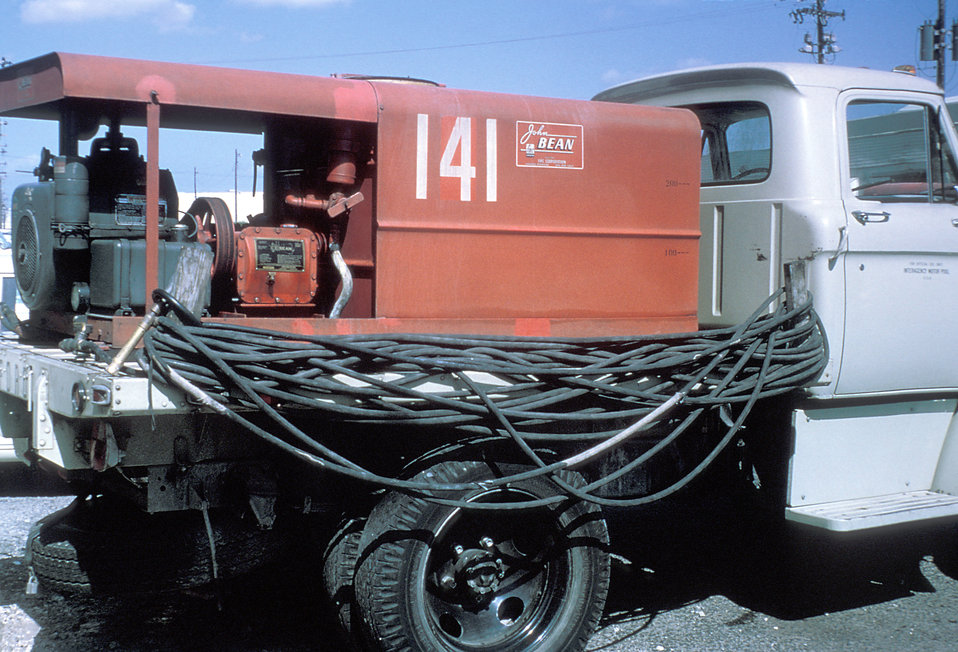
A photograph of a mosquito spray truck during the 1965 Aedes Aegypti eradication program in Miami, Florida.